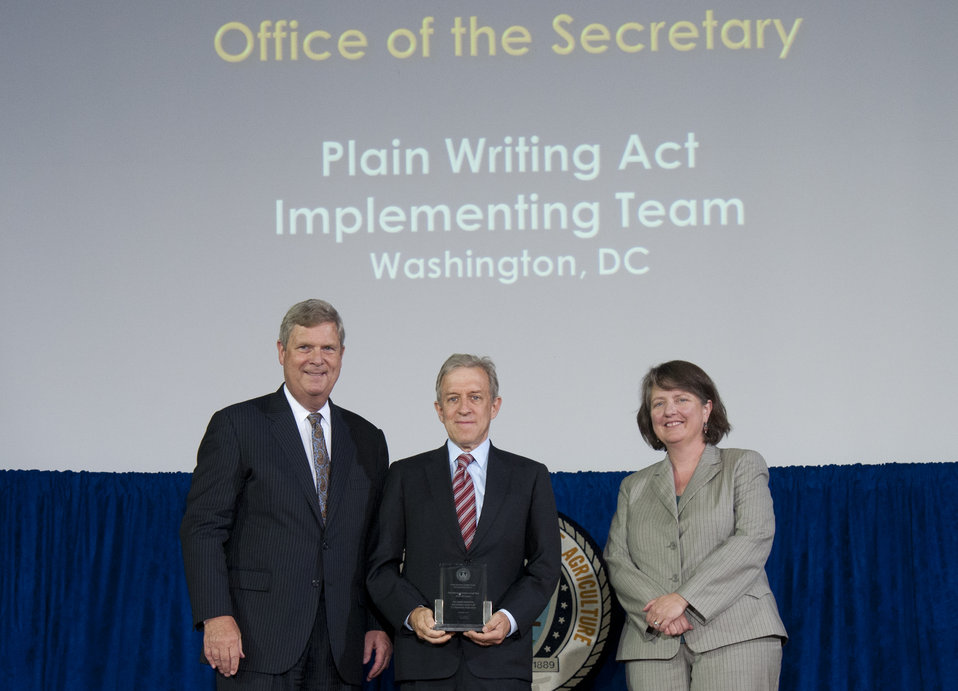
Agriculture Secretary Tom Vilsack and Agriculture Deputy Secretary Kathleen Merrigan present the Secretary’s Honor Award to Plain Writing Act Implementing Team Office of the Secretary group leader Dr. Jerold R. Mande at the U.S. Department of Agriculture (USDA) 64th Annual Honor Awards Ceremony in Washington, D.C. on Wednesday, Sept. 12, 2012. The Plain Writing Act Implementing Team received their award for outstanding results implementing the Plain Writing Act of 2010, enabling USDA to better serve the millions of people who depend on our programs and services.